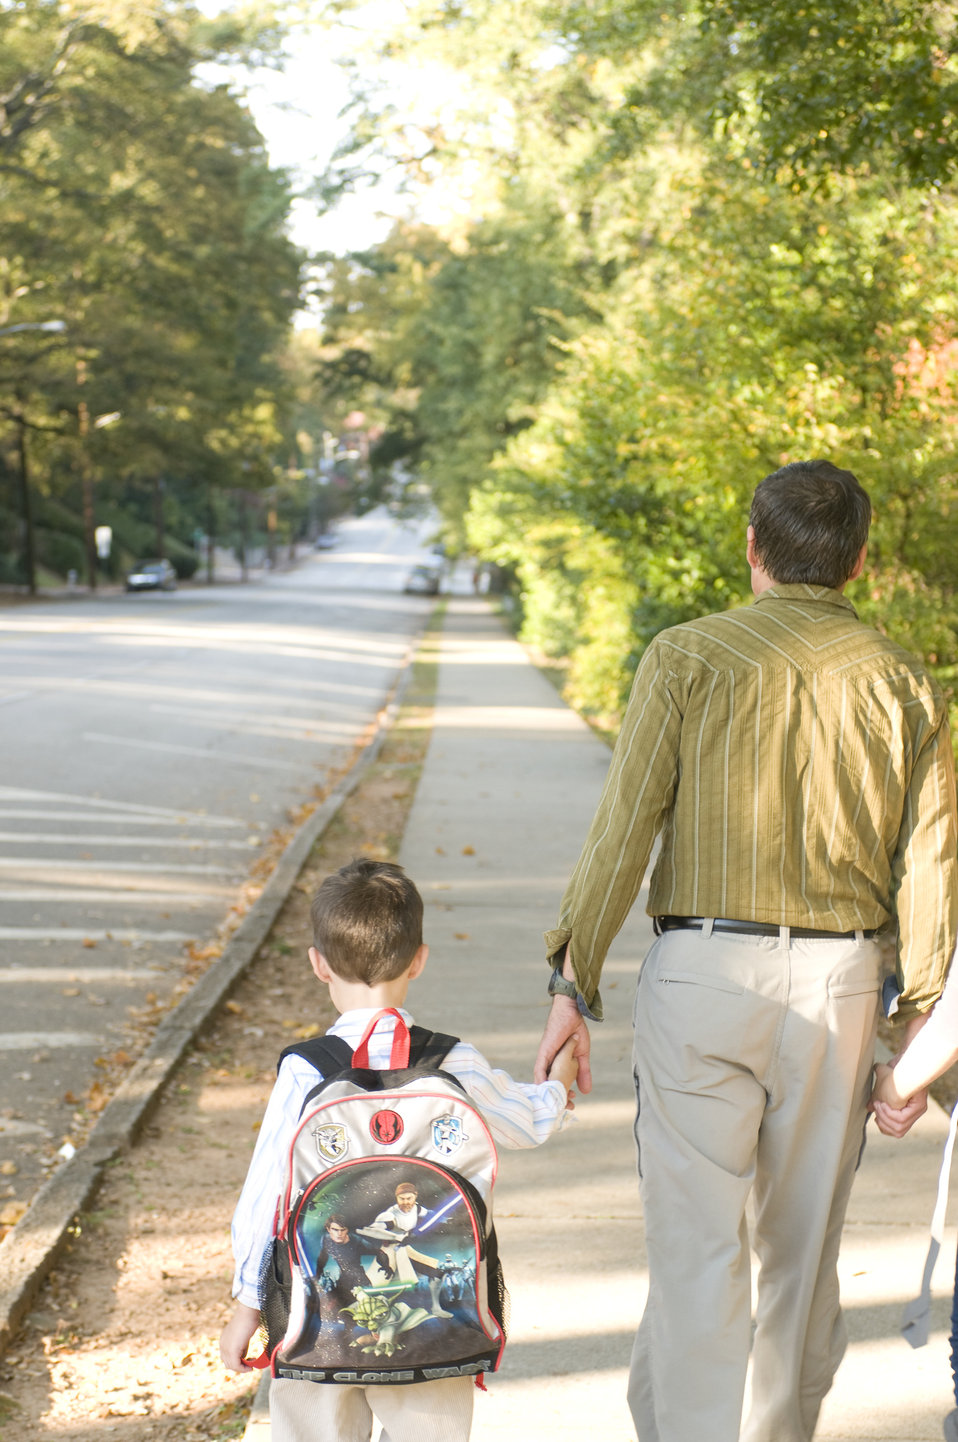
This image depicts a father and his two children walking hand-in-hand down a Georgian city street. His young son to his left, and daughter to his right, dad and kids were using the sidewalk as their path on this beautiful southern day. Note that they were dressed appropriately, their clothing protecting them from an extended time spent in the sunshine, and their backpacks filled with the requisite water, additional sunscreen, and some energy-filled snacks.